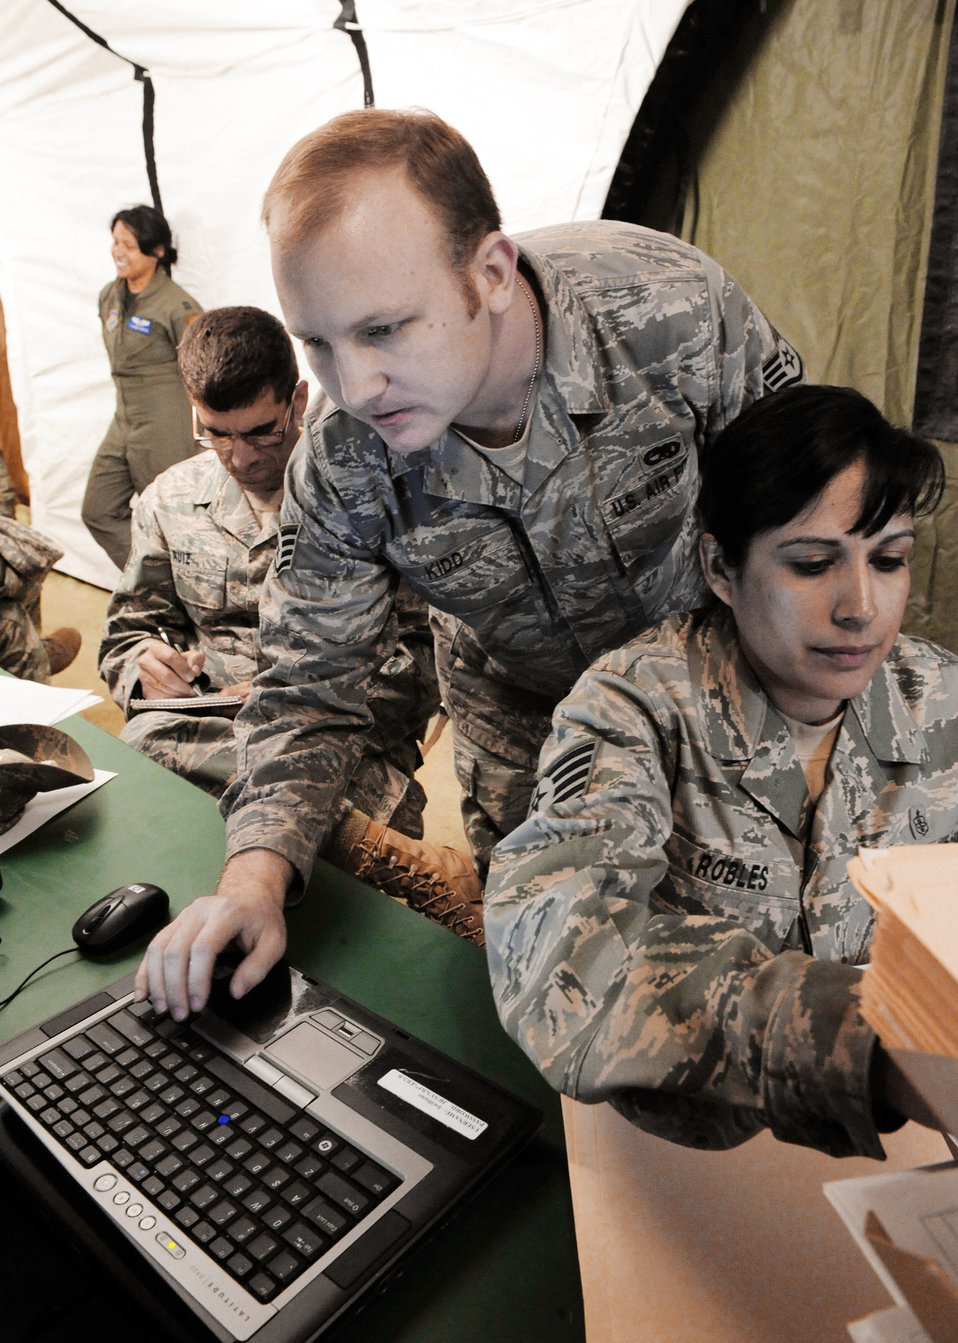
Airmen aid medical support mission in Chile

Staff Sgt William Kidd adds a computer to the domain for the Expeditionary Medical Support team admitting desk to the domain March 15, 2010, in Angol, Chile. Sergeant Kidd, assigned to the 52nd Combat Communications Squadron from Robins Air Force Base, Ga., deployed with another member of his unit March 7 to support an Expeditionary Medical Support team in relief efforts after the earthquake in Chile Feb. 27.